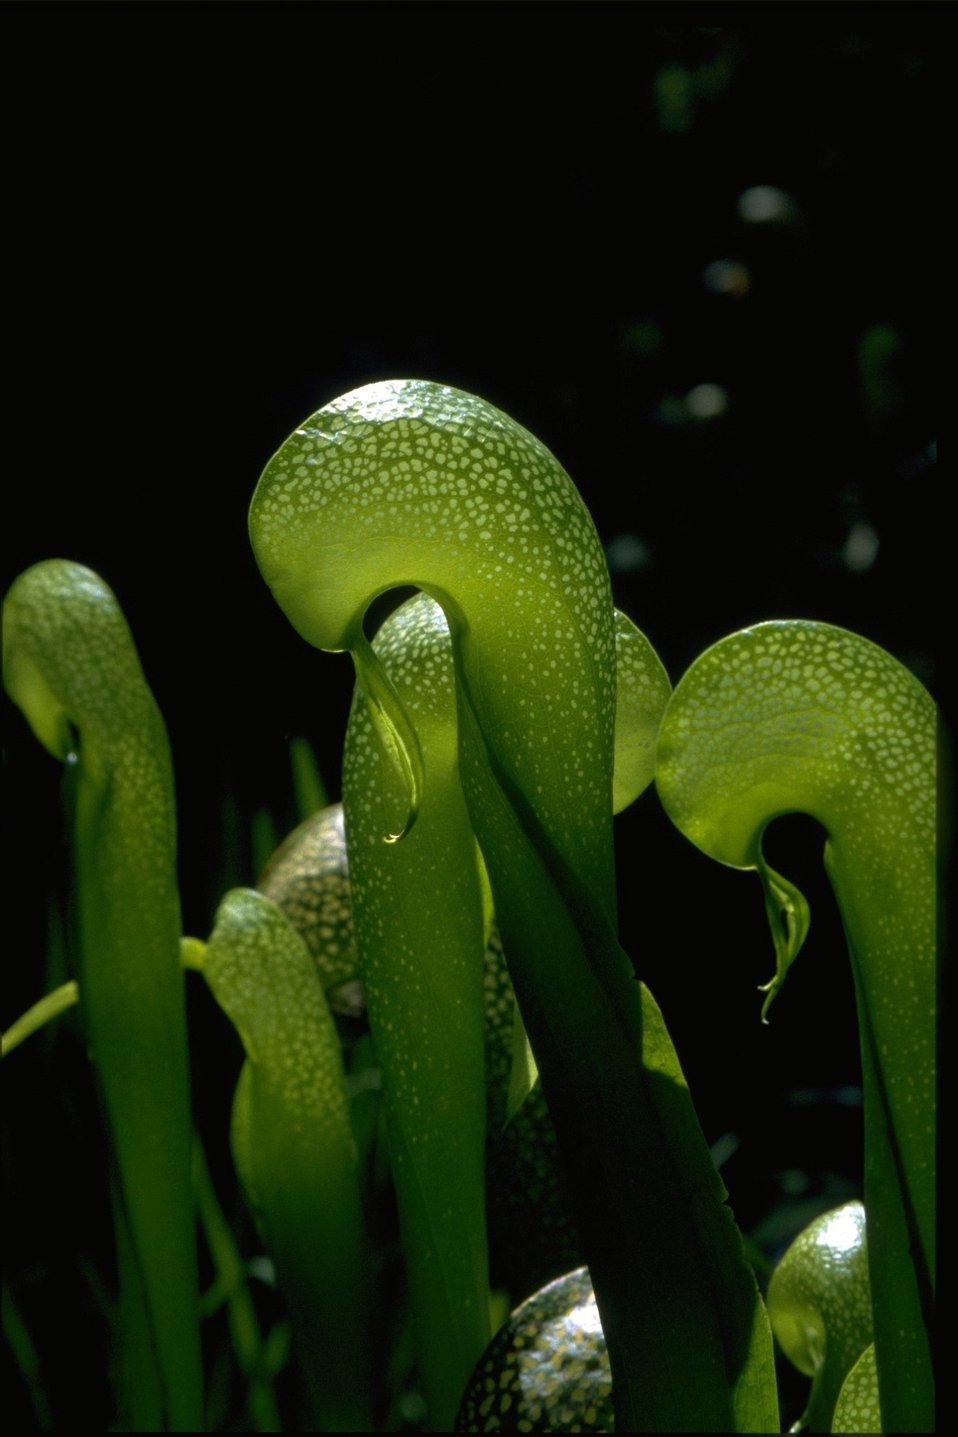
Closeup shot of Cobra Lily, Darlingtonia californica.